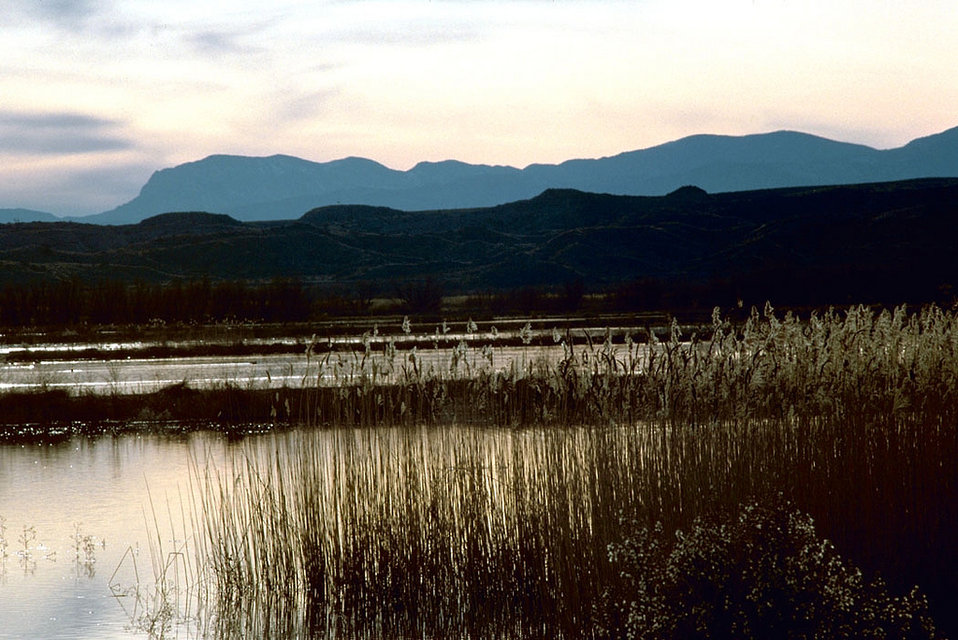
Bosque del Apache National Wildlife Refuge, NM

Sunset